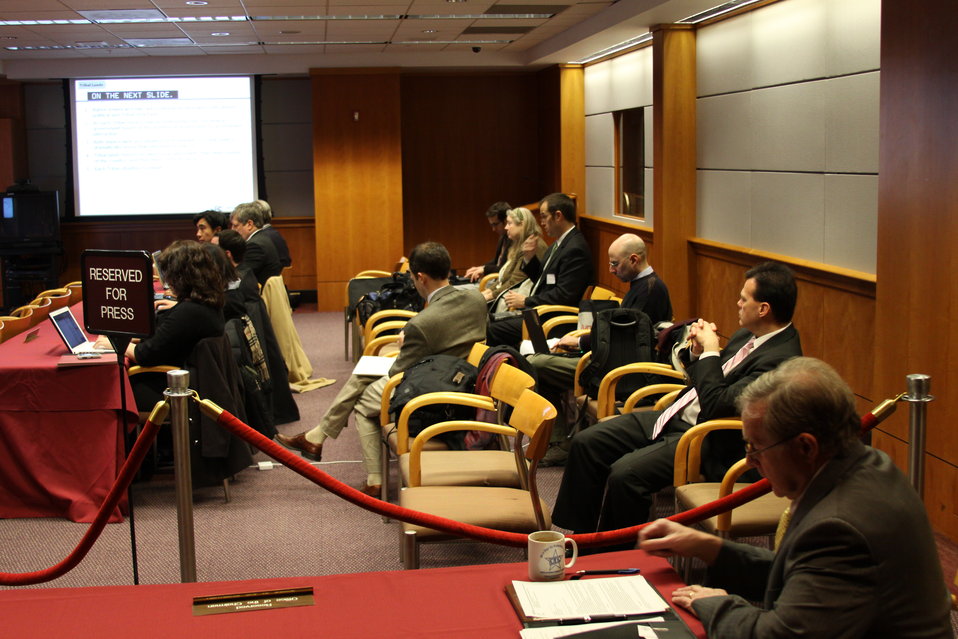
December Commission Meeting